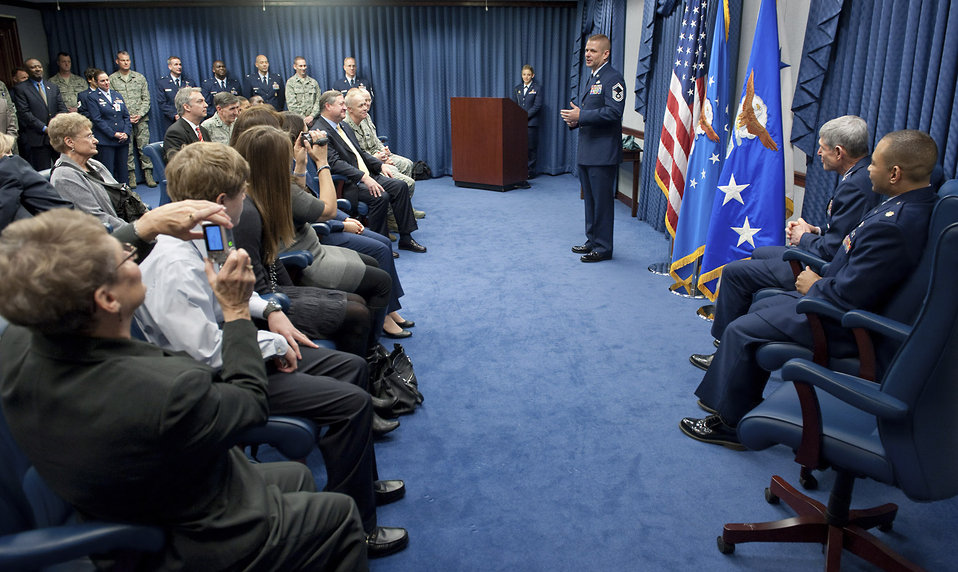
2010 General Lew Allen Jr. Award

Senior Master Sgt. Anthony Smith speaks to the audience after receiving the 2010 General Lew Allen Jr. Award during a ceremony Jan. 4, 2011, in the Pentagon. The award is presented annually to an officer and to an NCO working in aircraft, munitions or missile maintenance and directly involved in aircraft sortie generation. The award's namesake served as the Air Force Chief of Staff from 1978 to 1982. Sergeant Smith was honored for his work as the 57th Aircraft Maintenance Squadron Viper Aircraft Maintenance Unit superintendent at Nellis Air Force Base, Nev.